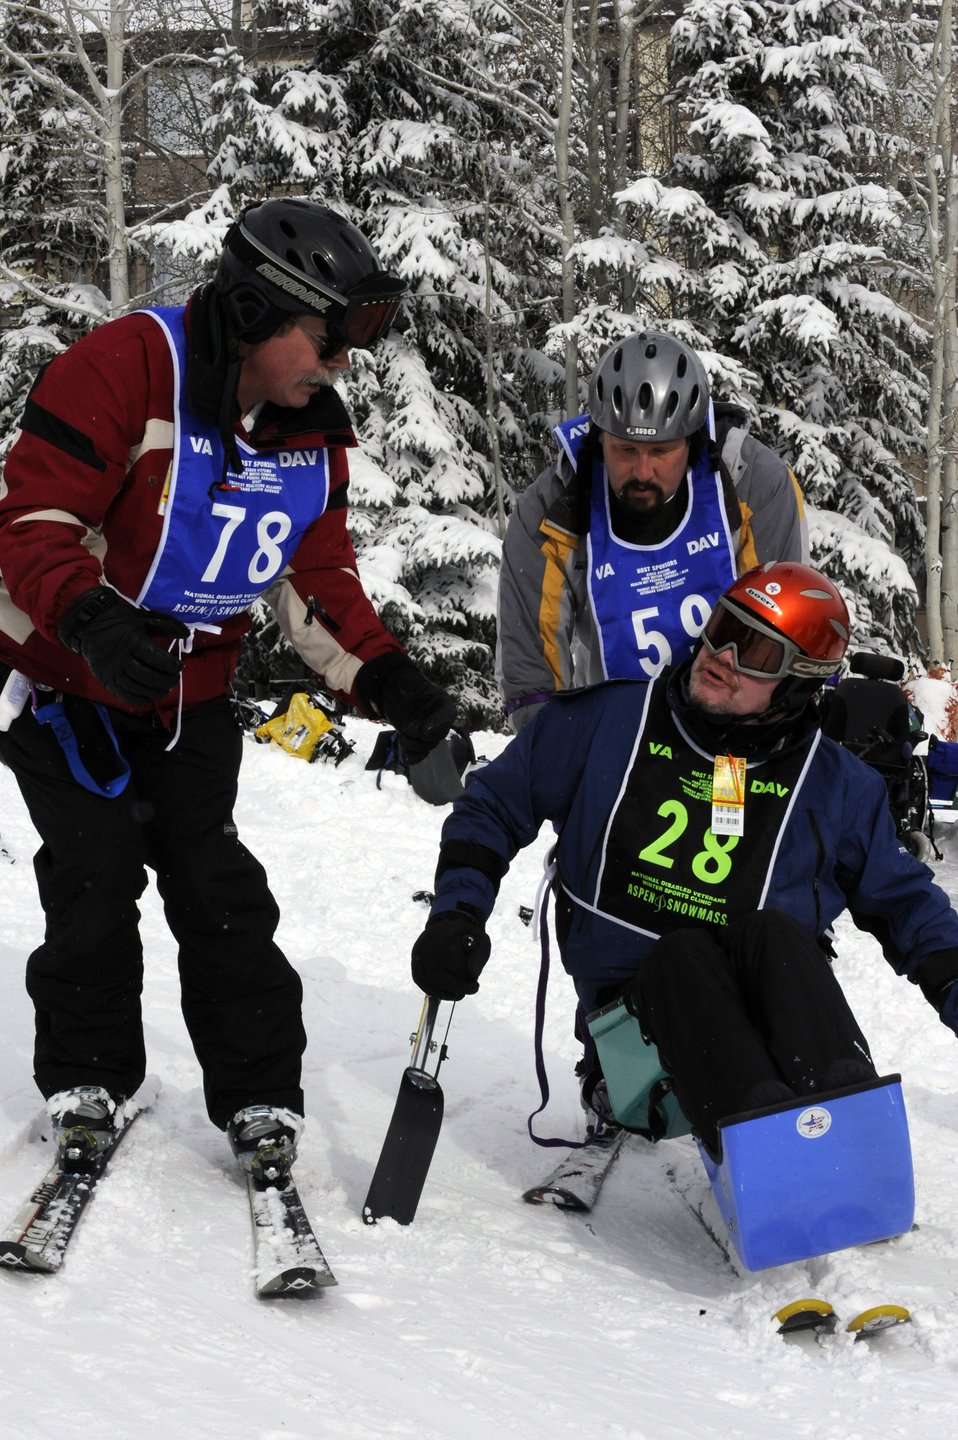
Winter rehabilitation clinic shows veterans potential

Glenn Hallberg and Mark Finken teach Michael Murphy how to ski March 30 during the 23rd National Disabled American Veterans Winter Sports Clinic. Mr. Hallberg and Mr. Finken are ski instructors for the sports clinic. Mr. Murphy is prior Air Force and his hometown is Dayton, Ohio. This is Mr. Murphy's first year attending the Disabled American Veteranss Winter Sports Clinic.